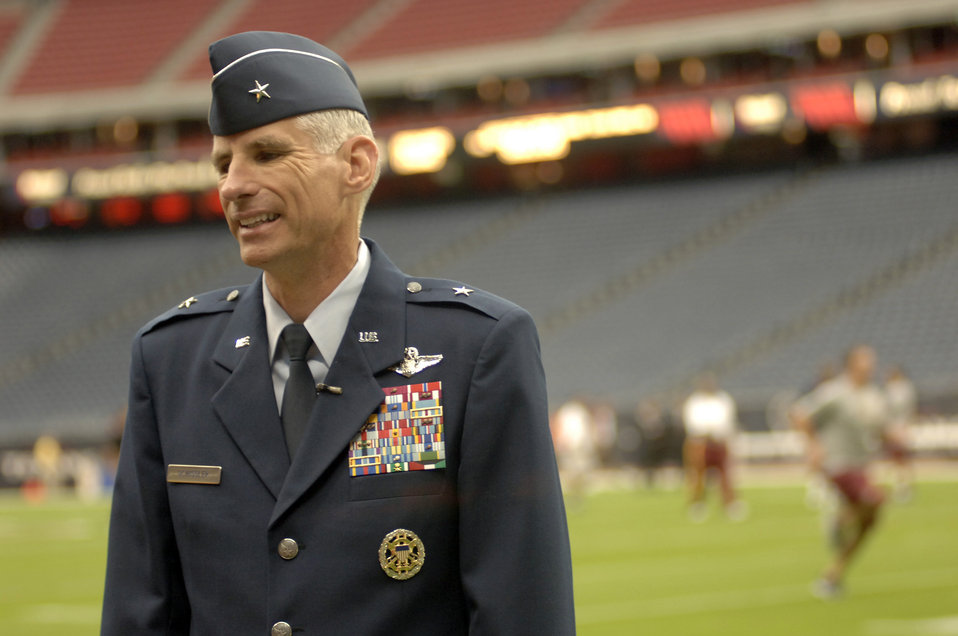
The Texans honored military servicemembers in their Salute to the Military day

Brig. Gen. Mark O. Schissler speaks to media before presiding over the Houston Texans versus Washington Redskins game coin toss at Reliant Stadium in Houston Sept. 24. The game between the Houston Texans and Washington Redskins was designated as the Houston Texan's Salute to the Military day by team officials. General Schissler is the deputy director for the war on terrorism in the Joint Staff, Washington, D.C.